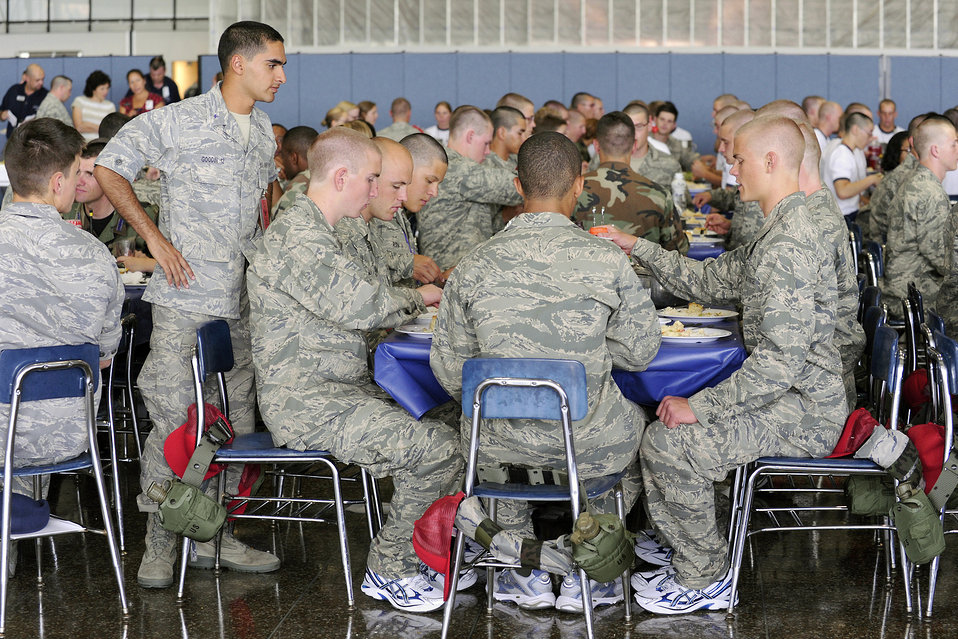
New Academy cadets learn dining 'traditions'

Cadet 2nd Class Jared Goodin ensures proper meal procedures are followed during the first day of basic cadet training at the U.S. Air Force Academy, Colo., June 25, 2010. The day also included an introduction to the physical training regimen.